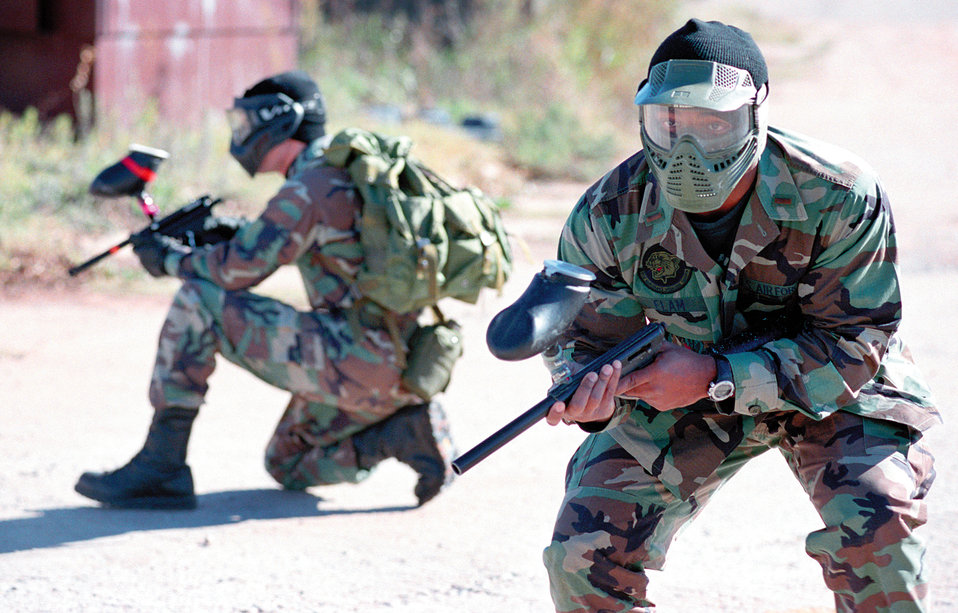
Attack of the lieutenants

TINKER AIR FORCE BASE, Okla. -- Using land navigation and combat tactics, 2nd Lt. Earl Elam (right) keeps a close eye on his surroundings as his unit moves out to rescue a